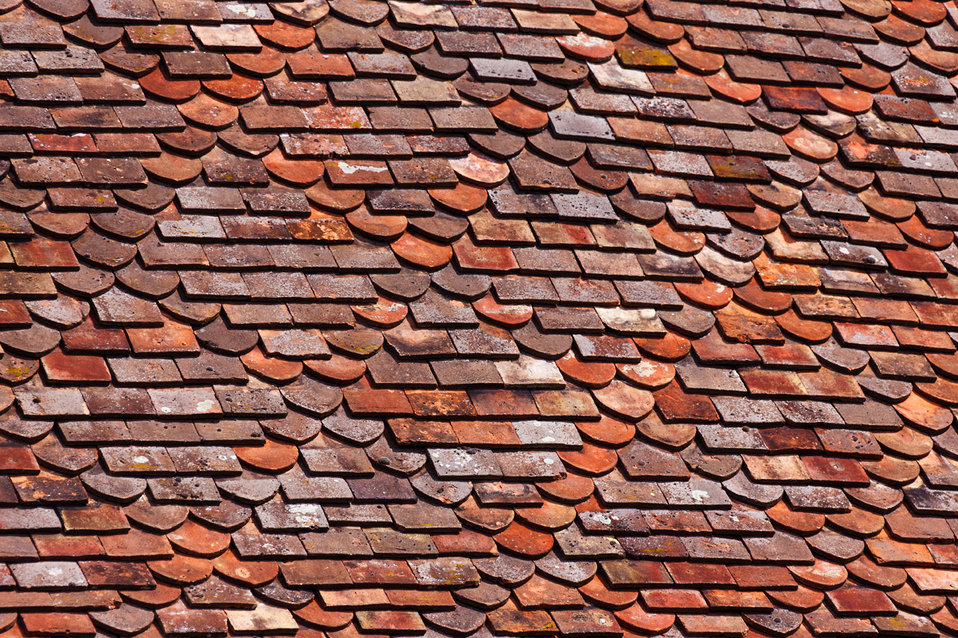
Roof tiles on a country house.